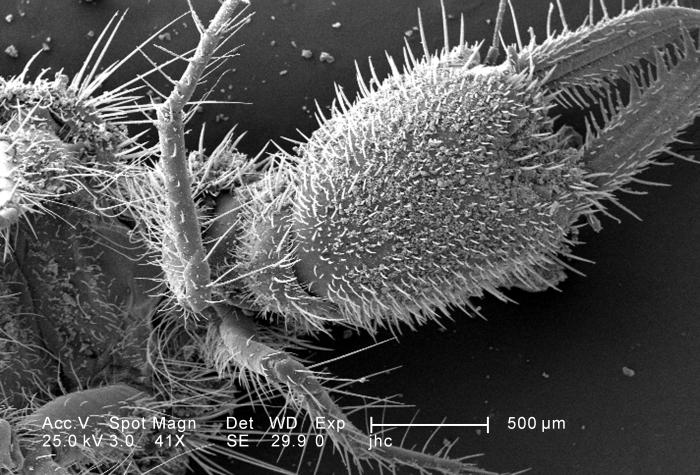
Under a low magnification of only 41X, this scanning electron micrograph (SEM) revealed the ultrastructural features found on the ventral exoskeletal surface of this larval-staged antlion, at the junction of the head and thoracic regions. This larva is sometimes referred to as a 'doodlebug', because of the trails it leaves in the soft sand as it hunts for prey. This arthropod, i.e., jointed legs, undergoes dramatic morphologic changes when it metamorphoses into a beautiful flying antlion lacewing.